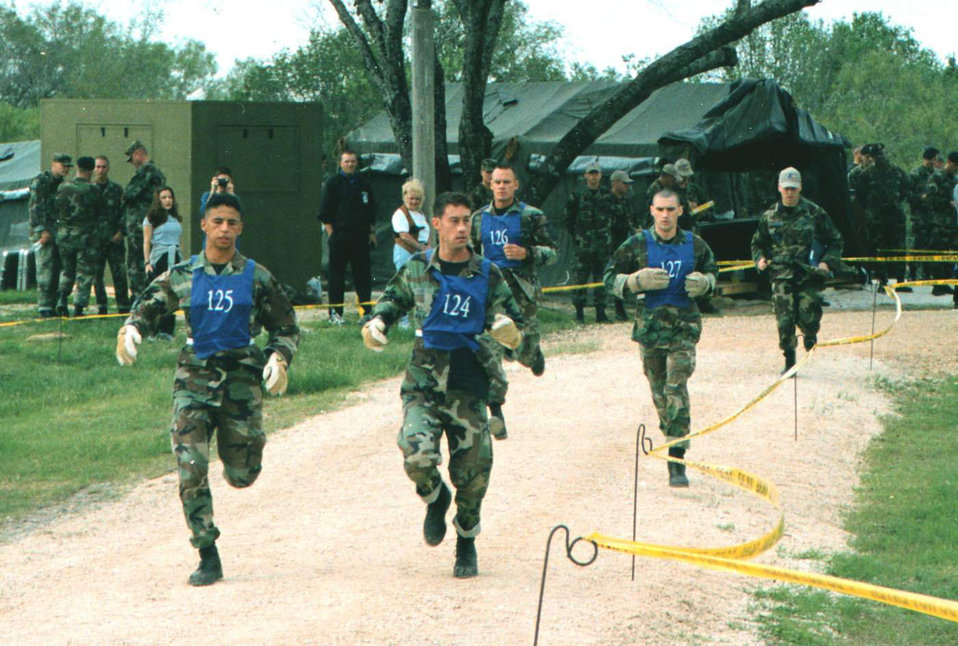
Go, go, go

LACKLAND AIR FORCE BASE, Texas -- Members of the Air Force Material Command Defender Challenge team sprint to the first obstacle of the 'fitness challenge' Oct. 30 during the Defender Challenge competition here.